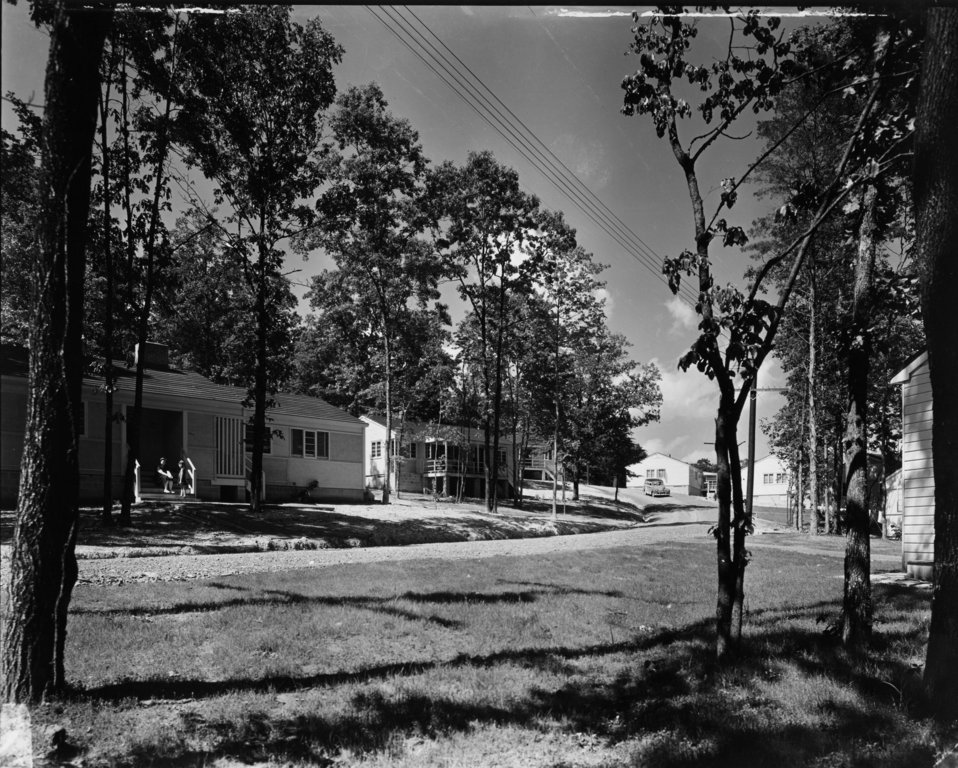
Housing at Oak Ridge